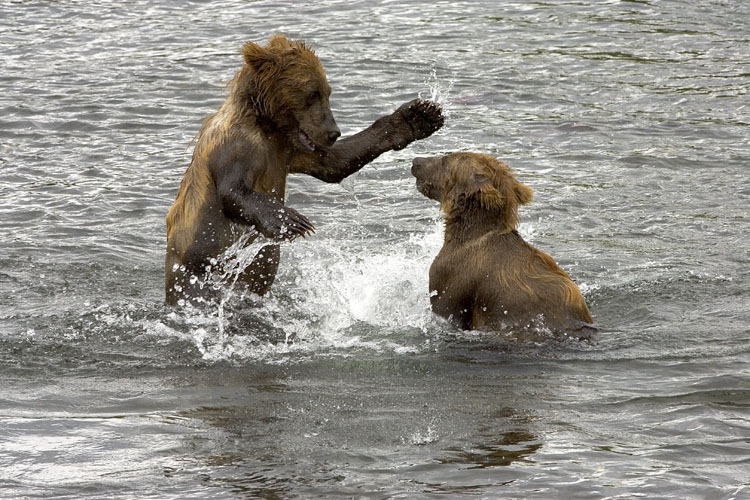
Kodiak Brown Bears

Playful Kodiak Bears